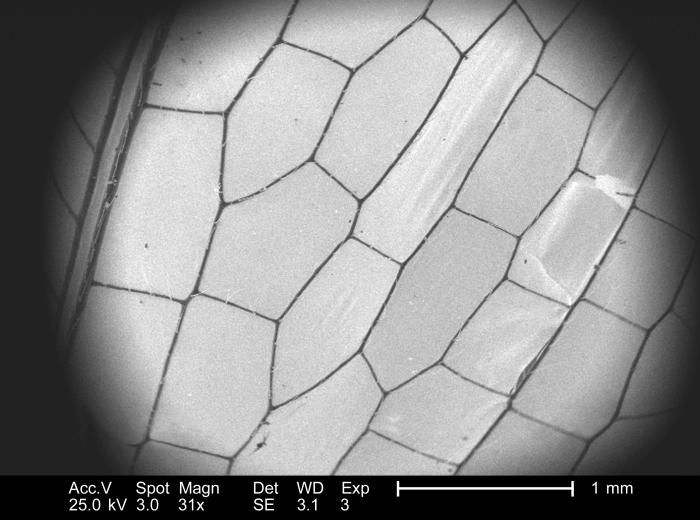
Under a low magnification of 31x, this 2005 scanning electron micrograph (SEM) depicted the wing venation of an unidentified deceased dragonfly found on the grounds of the Decatur, Georgia suburbs. The wing veins fulfill a number of functions including the regulation of the insect's temperature by allowing its blood to circulate through the beating wings, thereby, dissipating excessive heat, or warming its blood when its too cool. Due to an increased turgor pressure produced by fluid-filled vessels the wing veins act as supportive struts, maintaining the structural shape of the bilateral wings during flight. The wings also act as sensory structures, due to the presence of sensorial hairs, or 'setae' on their surfaces, which can be seen in this image.